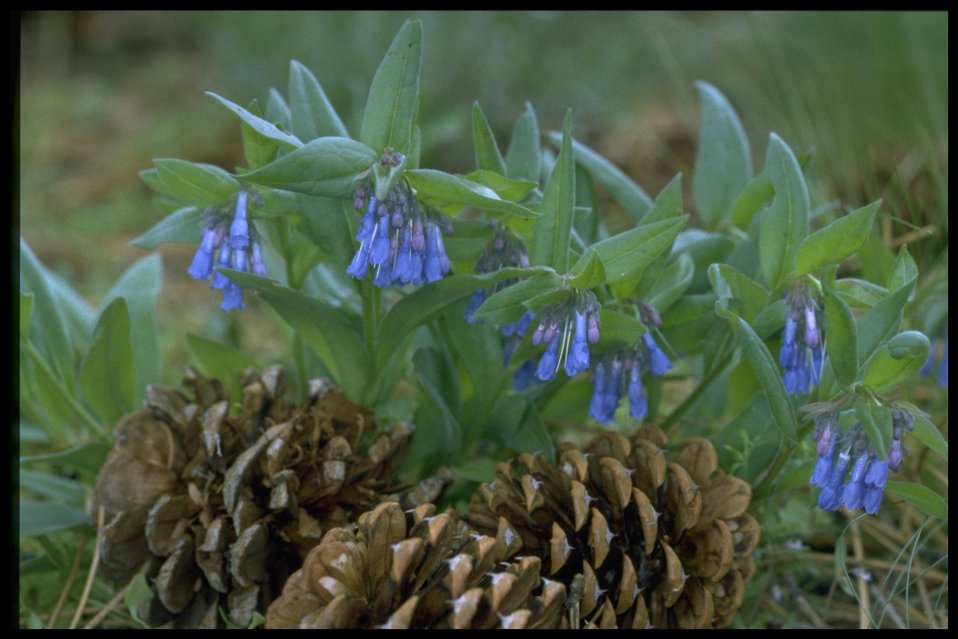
Medium shot of small bluebells (Mertensia longiflora).